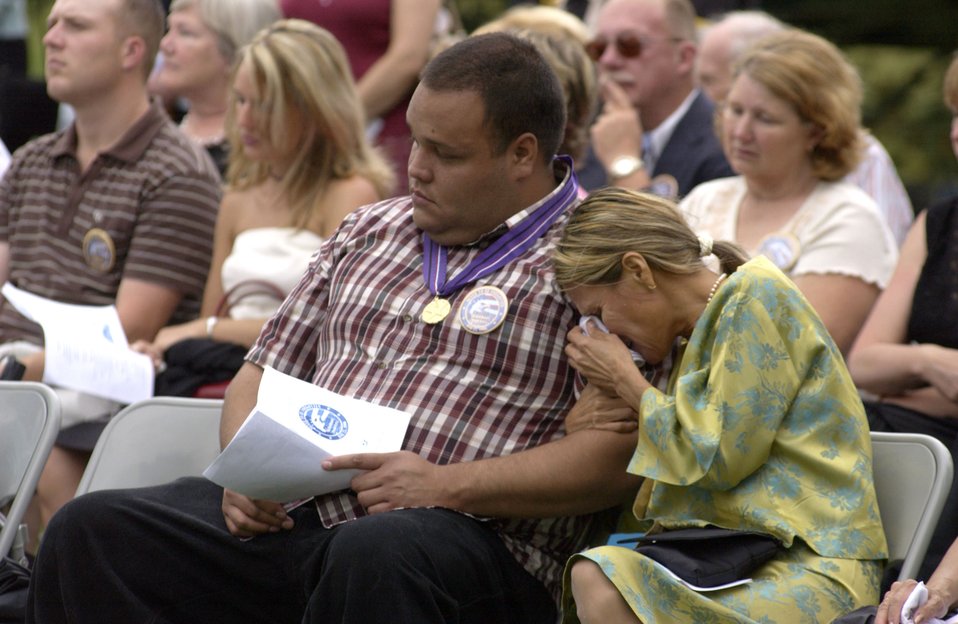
Khobar Towers 10th Anniversary

Jenny Haun is comforted by her son, Rafael Haun, during the 10th anniversary remembrance ceremony of the Khobar Towers bombing on Sunday, June 25, at Arlington National Cemetery, Va. Her husband, Capt. Leeland Haun, was one of 19 Airmen killed in the terrorist bombing at Dhahran Air Base, Saudi Arabia, on June 25, 1996. Family members and friends of those lost gathered for the remembrance ceremony.